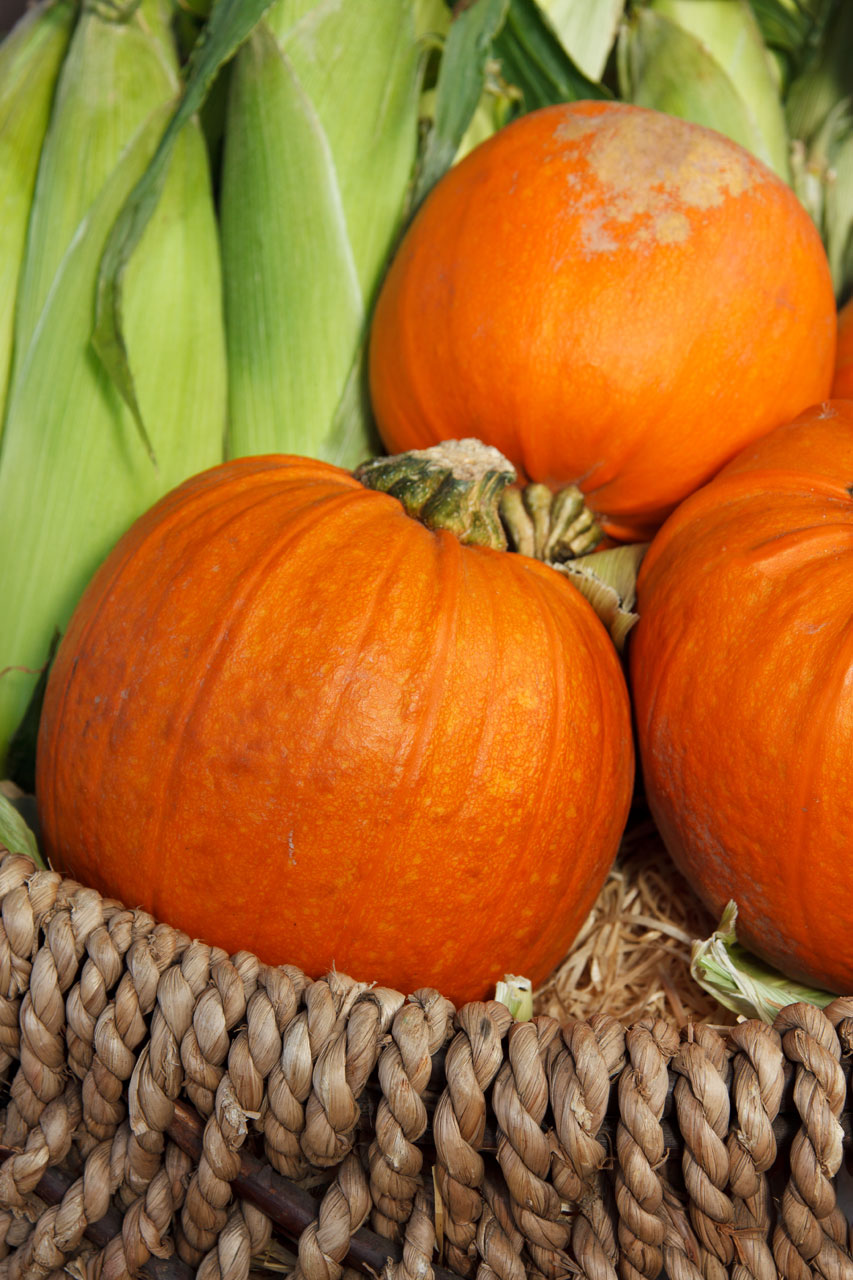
Pumpkins and corn in the basket.